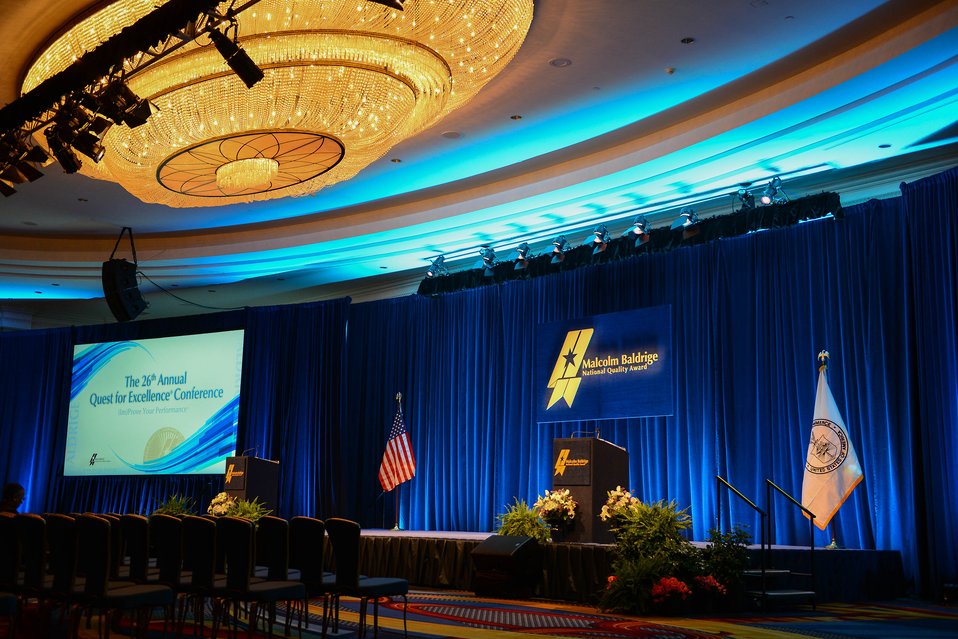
26th Quest for Excellence and Examiner Recognition Ceremony stage, April 7-9, 2014

Stage for the 26th Annual Quest for Excellence® Conference and Baldrige Examiner Recognition Ceremony, April 7-9, 2014